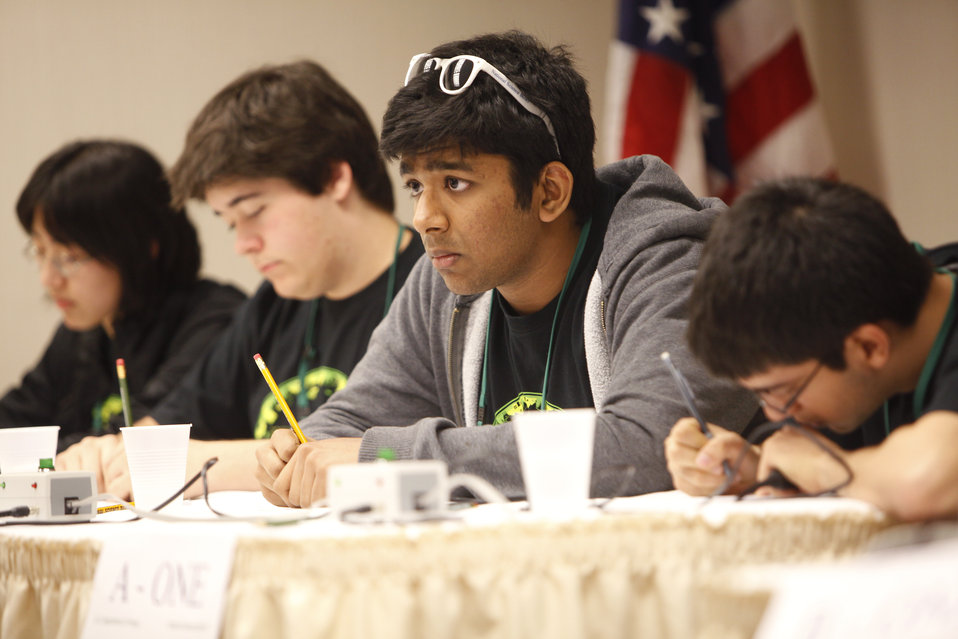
Pictured are the members of the DuPont Manual High School from Louisville, Kentucky during the 2012 National Science Bowl in Washington, DC on April 29, 2012.

DOE created the National Science Bowl in 1991 to encourage students to excel in mathematics and sciences and to pursue careers in these fields. The department supports mathematics and science education to help provide a technically trained and diverse workforce for the nation. More than 2000,000 students have participated in the National Sciences Bowl throughout its history.